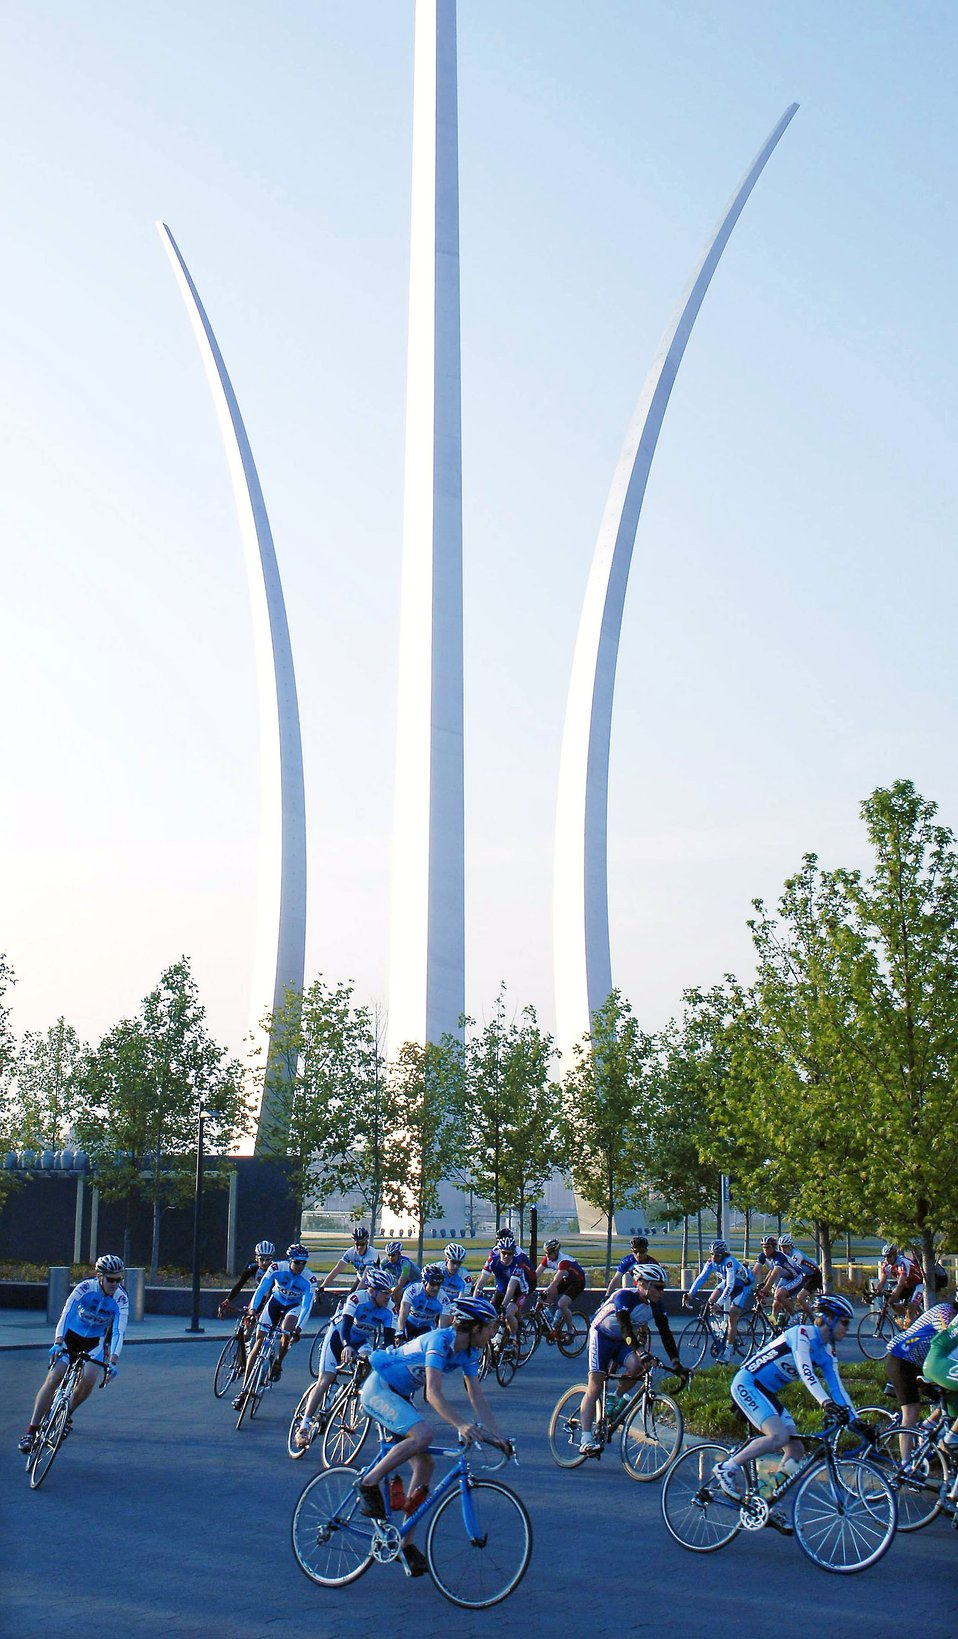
Air Force participates in pro cycling event

More than 300 cyclists ride past the Air Force Memorial in a ceremonial lap that kicked off the U.S. Air Force Cycling Classic held May 4 in Arlington, Va. Proceeds from the event, which featured both amateur and professional cyclists, will benefit U.S. military members who suffer from traumatic brain injuries.